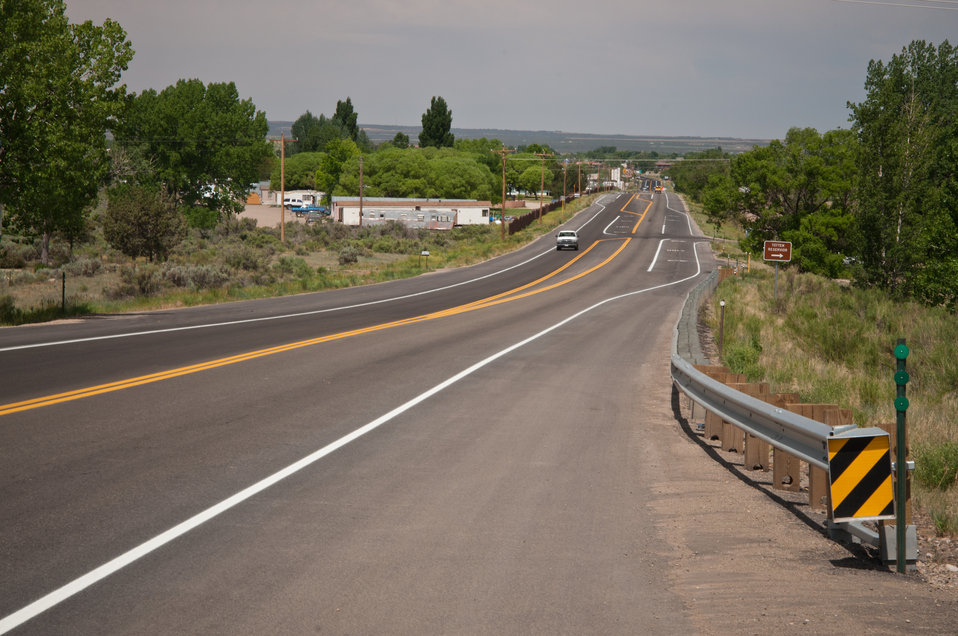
The U.S. Department of Agriculture (USDAS) StrikeForce Initiative in cooperation with public and private organizations offers many economic grants, loans and conservation contracts through USDA's Rural Development (RD) and the Natural Resources of Conservation Service (NRCS) for areas of rural America with a high percentage of people living below the poverty level and considered economically distressed.